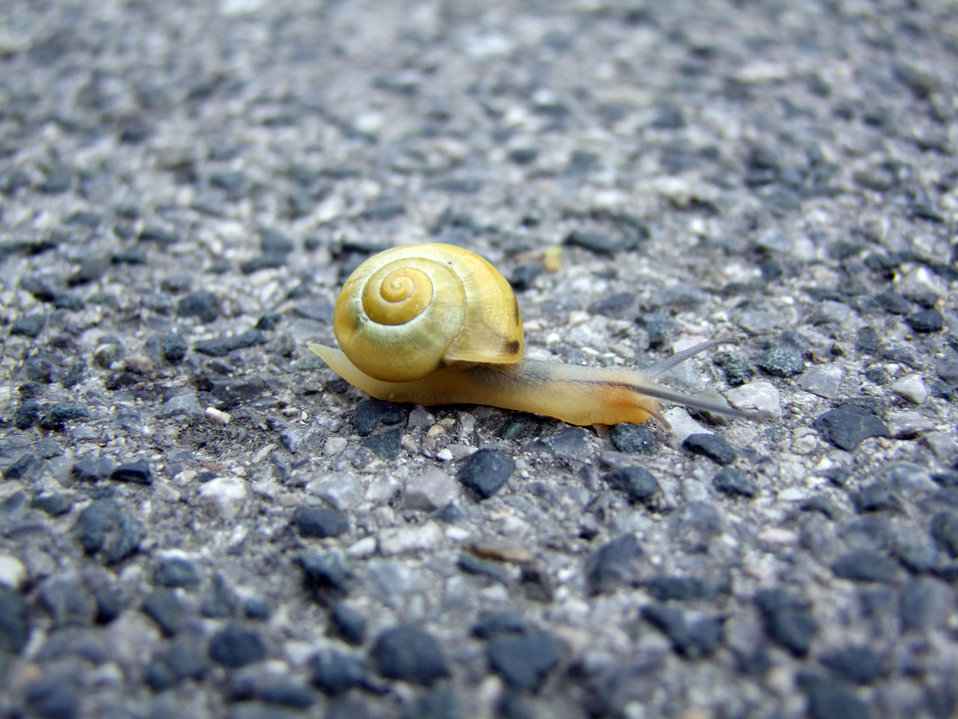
Need for speed

As you can see in aerodynamics, snail was driving in sport mode.